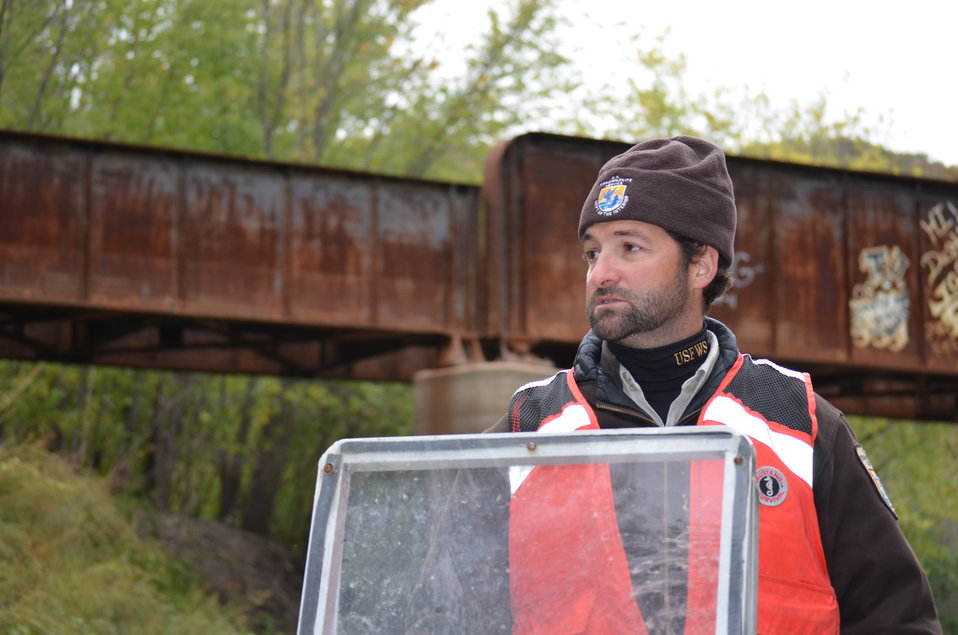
Steady driver

USFWS Project Leader Tracy Hill steers boat underneath old cargo bridge. USFWS/Ashley Spratt